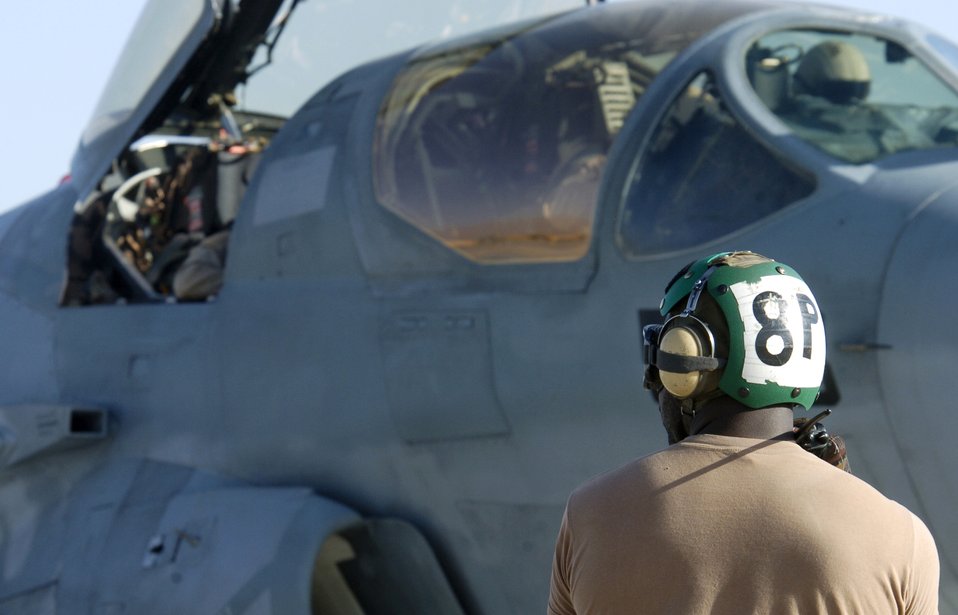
On the prowl

Crewmembers of a Navy EA-6B Prowler perform pre-flight checks before takeoff from Bagram Air Base, Afghanistan, on Thursday, June 15. Air Force and Navy crewmembers here fly the Prowler, providing support to ground troops in Afghanistan.